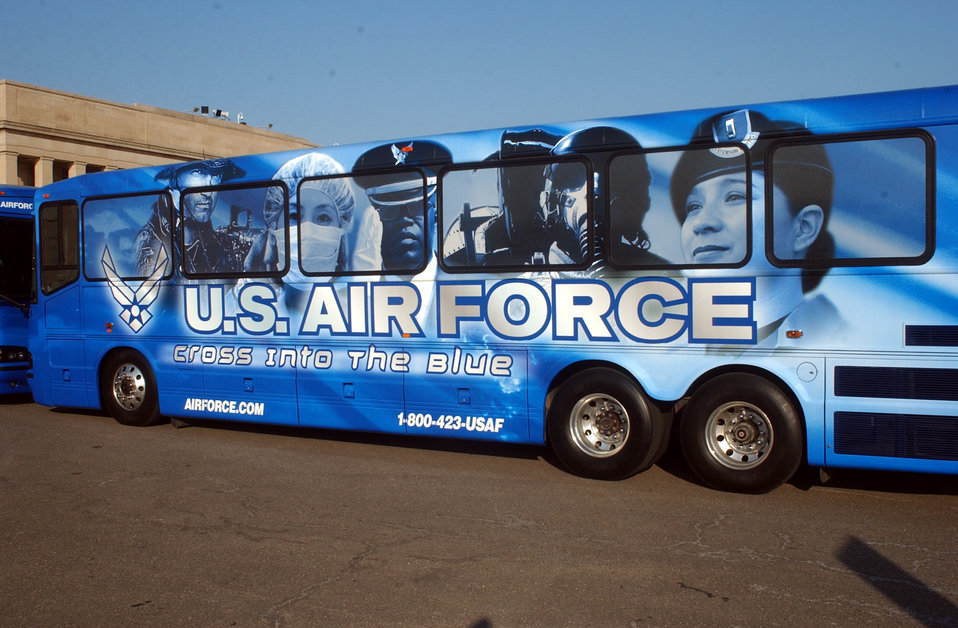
New bus design

WASHINGTON -- A new bus design scheme was unveiled at the Pentagon on Feb. 19. The new graphic design on the buses reflects the mission of the Air Force and demonstrates the diversity of careers in today's Air Force. There are a total of 10 buses in this test program. Four will operate from Bolling Air Force Base, D.C., and the other six will be at Randolph AFB, Texas; the U.S. Air Force Academy, Colo.; and Nellis AFB, Nev.